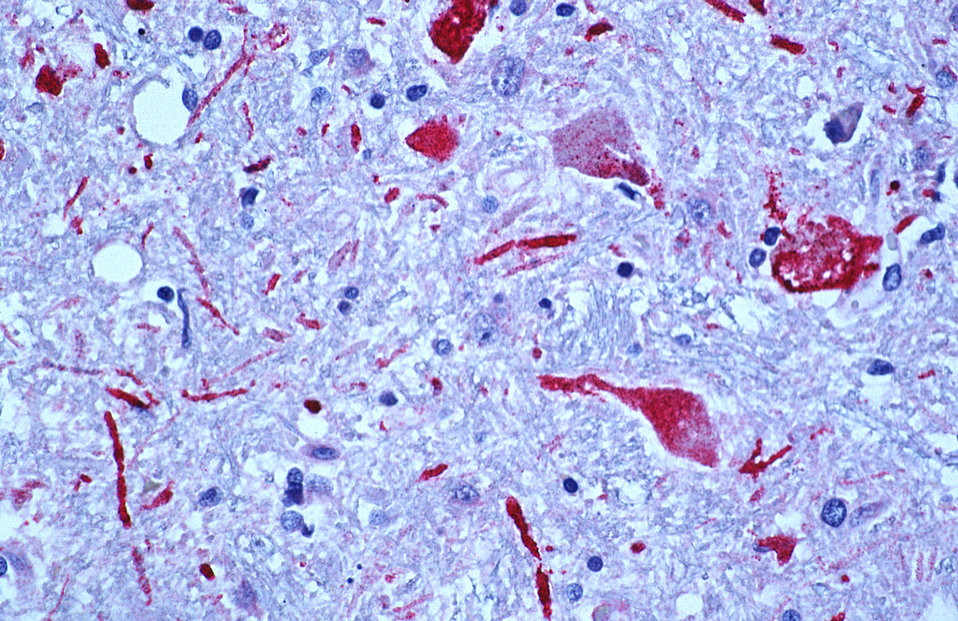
Brain tissue from a West Nile encephalitis patient.